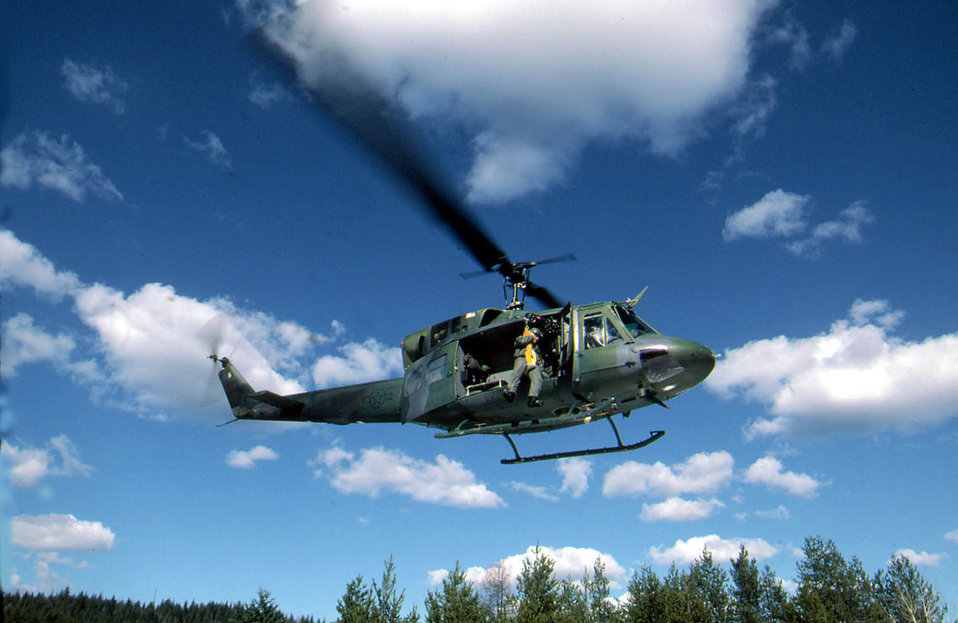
UH-1N Huey

FILE PHOTO -- The UH-1N Huey is a light-lift Air Force utility helicopter used for support of Department of Defense contingency plans. The helicopter has a number of uses. Its primary mission includes airlift of emergency security and disaster response forces, medical evacuation, security surveillance of off-base movements of nuclear weapons convoys and test range areas during launch conditions. It is also used for space shuttle landing support, priority maintenance dispatch support, and search and rescue operations. Other uses include airlift of missile support personnel, airborne cable inspections and distinguished visitor transport.